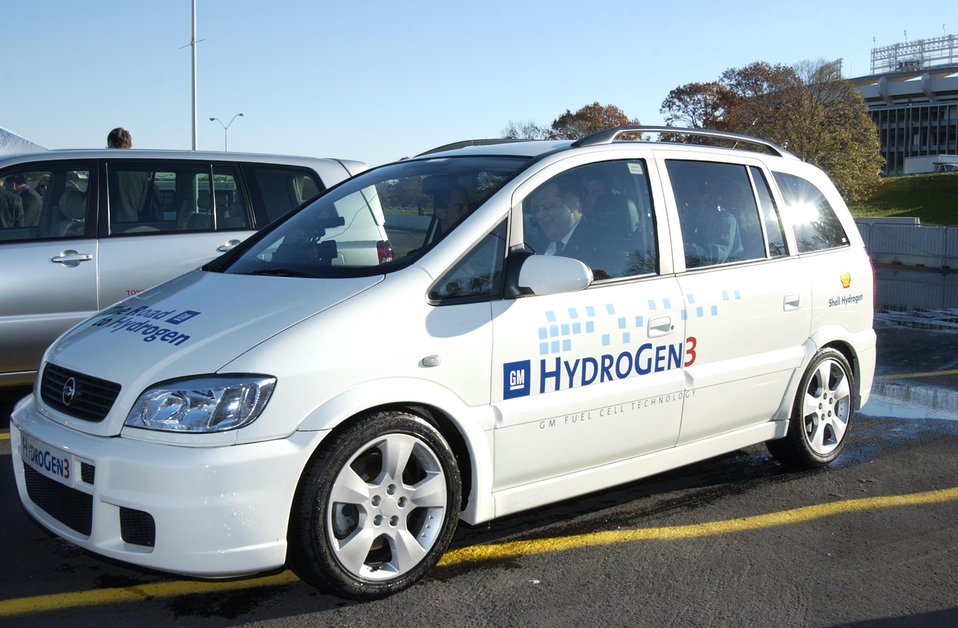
GM HYDROGEN 3 FUEL CELL VEHICLE.

GM'S HYDROGEN 3 FUEL CELL VEHICLE USES LIQUID HYDROGEN AS FUEL. HYDROGEN IS A CLEAN AND SUSTAINABLE FORM OF ENERGY THAT CAN BE USED IN MOBILE AND STATIONARY APPLICATIONS. FUEL CELLS HARNESS THE CHEMICAL ENERGY OF HYDROGEN TO GENERATE ELECTRICITY WITHOUT COMBUSTION OR POLLUTION.